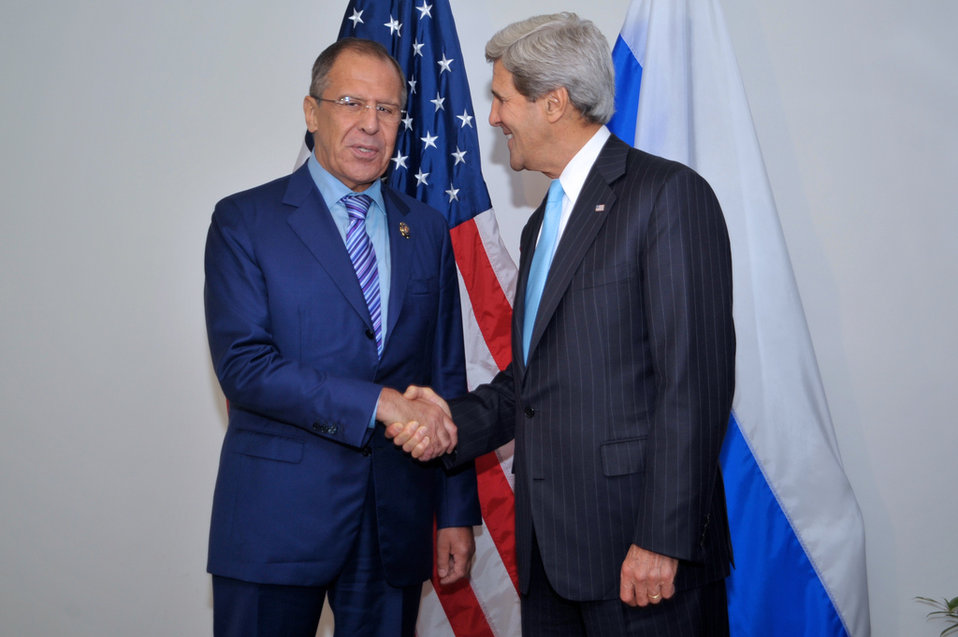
Secretary Kerry Greets Russian Foreign Minister Lavrov

U.S. Secretary of State John Kerry and Russian Foreign Minister Sergey Lavrov pose for photographers before the two held a bilateral meeting in Bandar Seri Begawan, Brunei, on July 2, 2013.